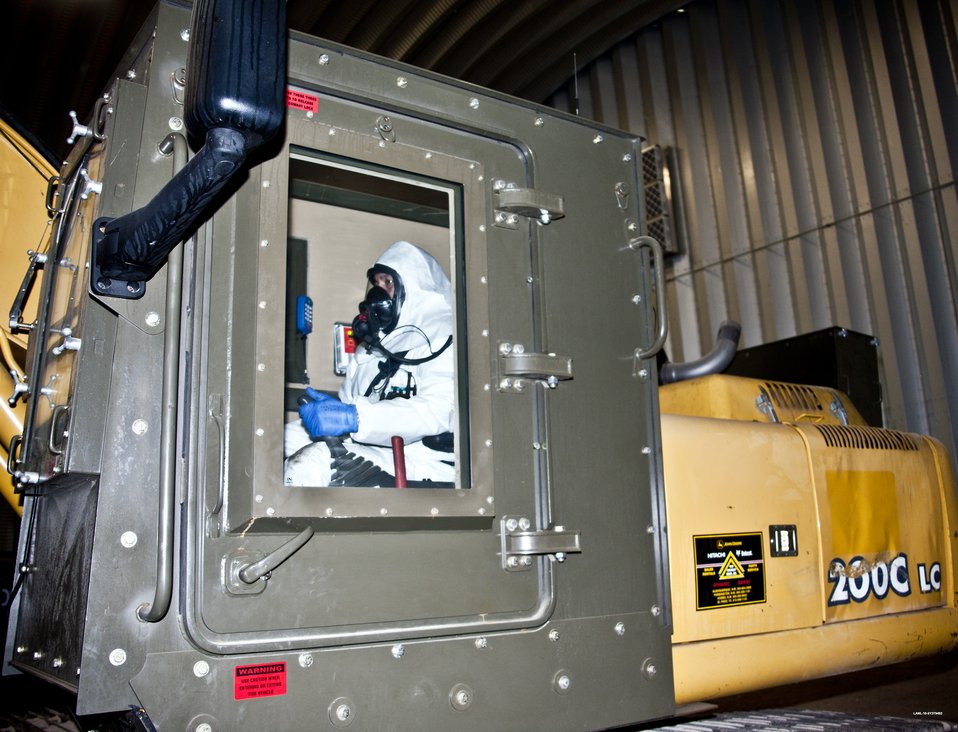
Cautious Recovery Act Excavation Cleans Up 1940s Los Alamos Waste Disposal Site

At Los Alamos National Laboratory, $94 million in Recovery Act funding is being used to clean up the Lab’s oldest waste disposal site, Material Disposal Area B (MDA-B), which was used from 1944 to 1948.